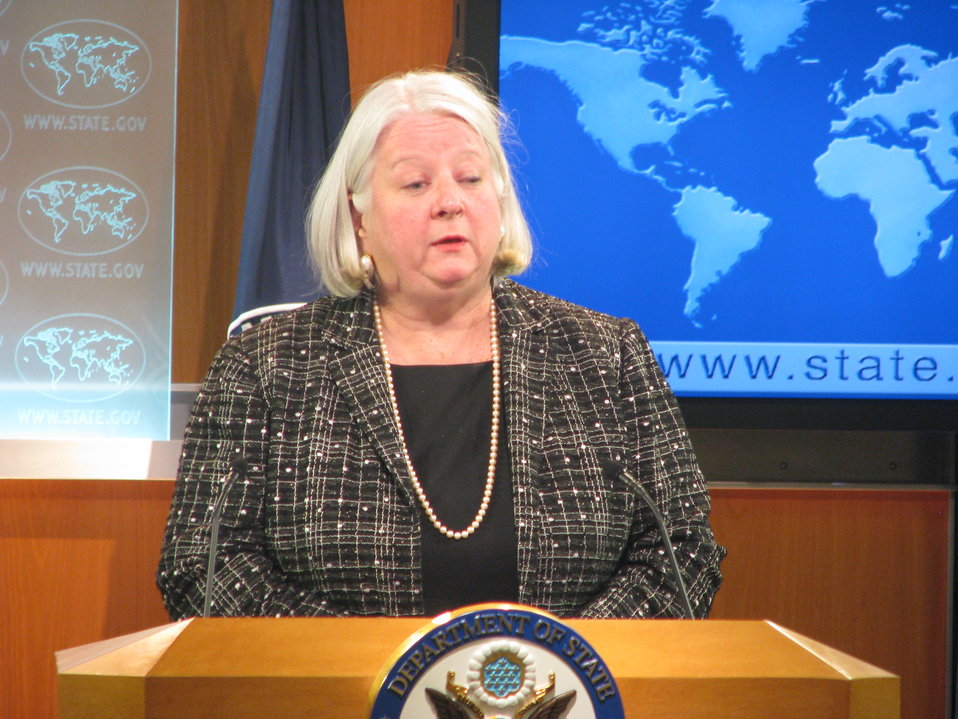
Deputy Assistant Secretary Sanderson Leads the Special Press Briefing

Deputy Assistant Secretary of State for Near Eastern Affairs Janet Sanderson leads the Special Press Briefing on Libya at the U.S. Department of State in Washington, D.C., on February 25, 2011.